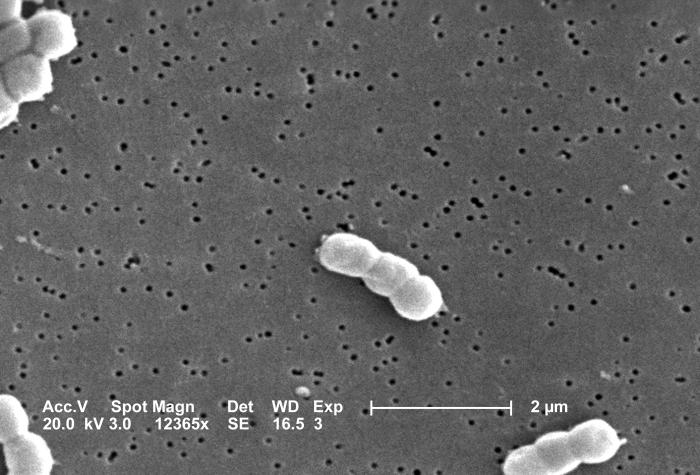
This SEM depicts a number of Gram-negative, non-motile Acinetobacter baumannii bacteria; Mag - 12365x.